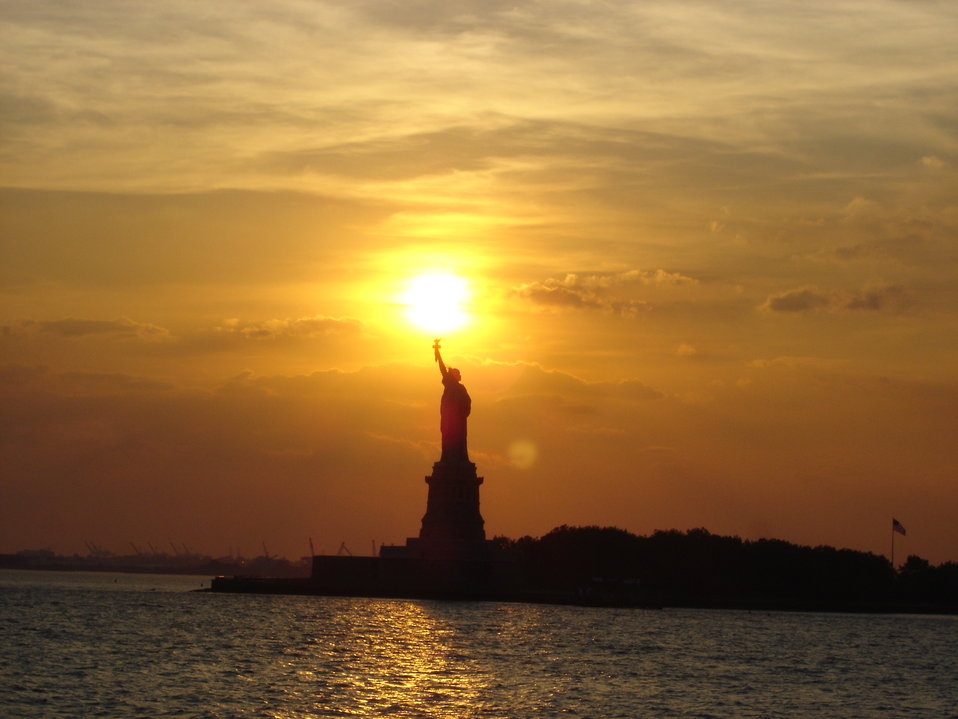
The Statue of Liberty at sunset holding the torch of freedom aloft.